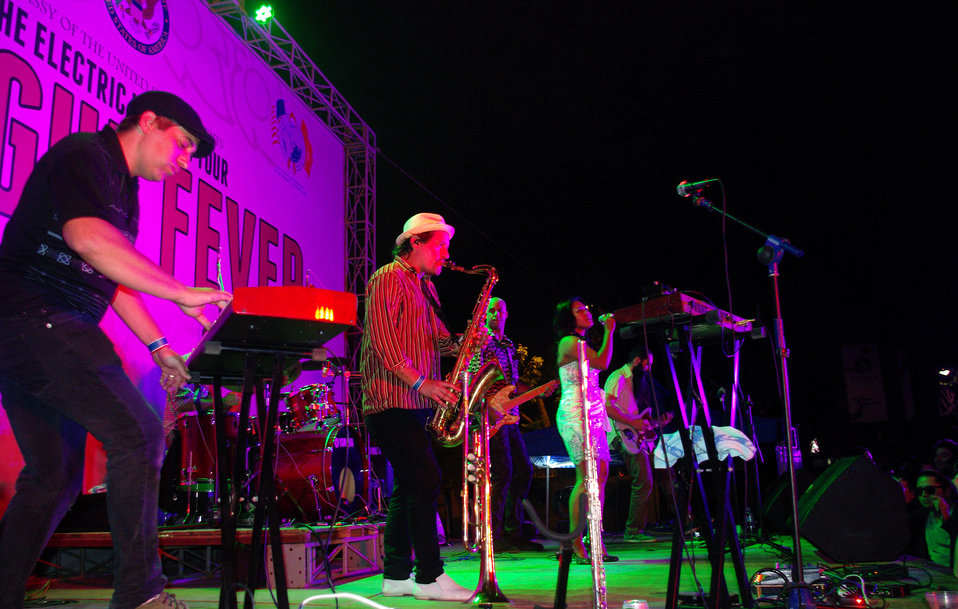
PEPFAR, U.S. Embassy Host Dengue Fever Concert in Hanoi